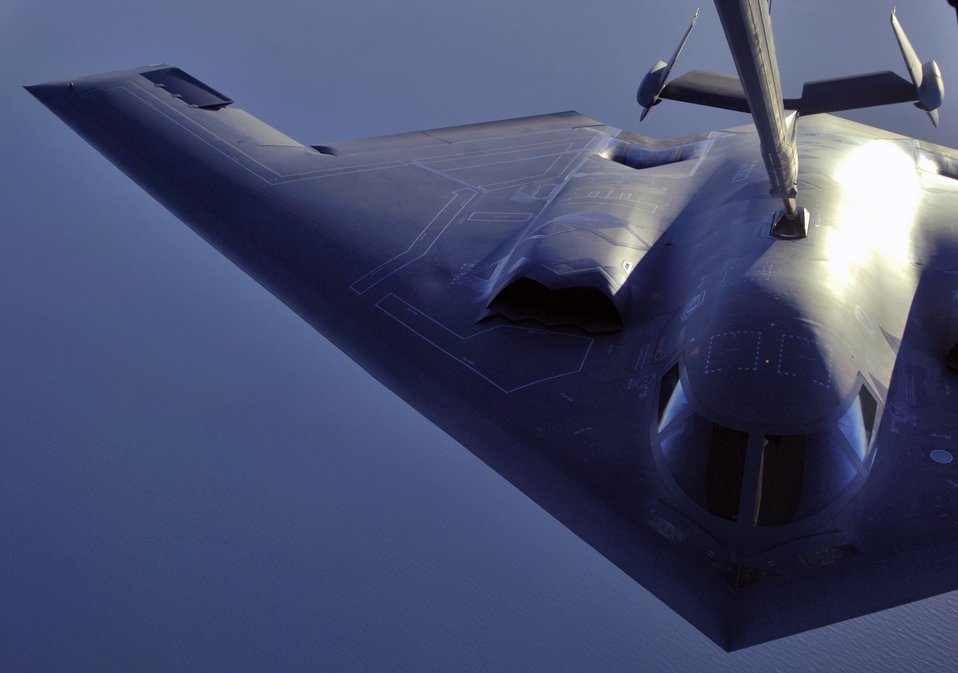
Exercise Green Lightning

A B-2 Spirit is refueled by a KC-10 Extender over Australia during exercise Green Lightning on Tuesday, July 25. The KC-10 and B-2 are from the 36th Expeditionary Wing at Guam. The exercise will test U.S. capabilities and provide operational familiarity in the region for the Pacific bomber presence as well as serve to enhance relations with the Australians.